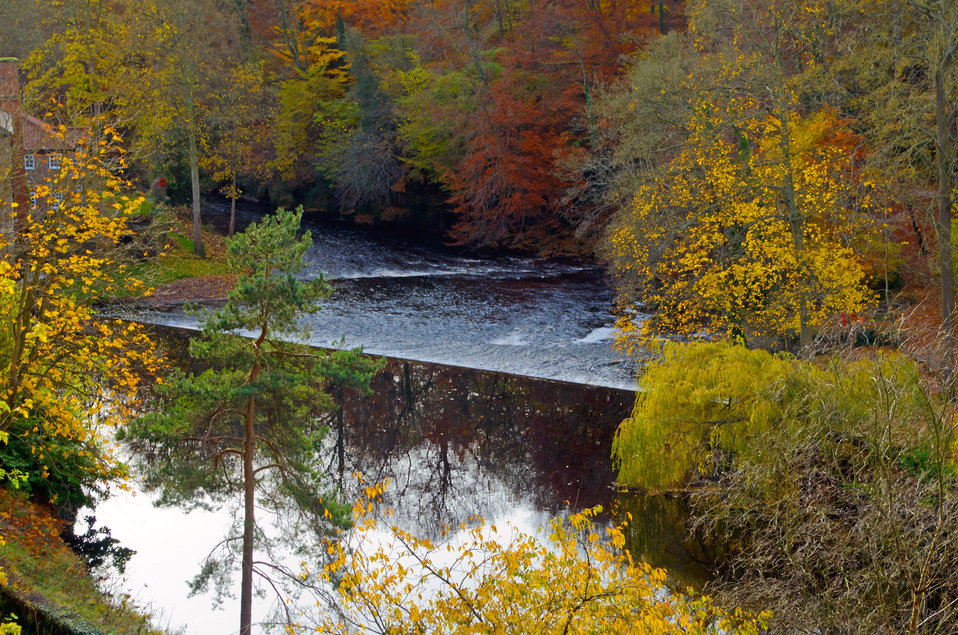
Autumn landscape.